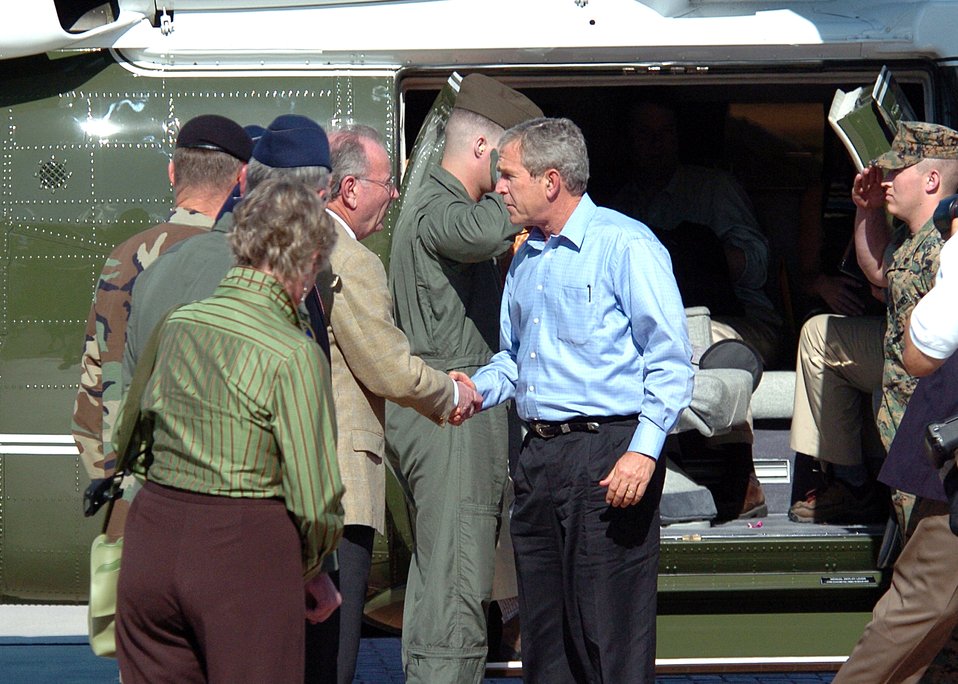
President monitors Hurricane Rita operations at Randolph

RANDOLPH AIR FORCE BASE, Texas -- President George W. Bush is greeted by San Antonio Mayor Phil Hardberger and other civilian and military representatives Sept. 24 upon his arrival here in Marine One. The president visited Randolph to receive an update about the military's role in Hurricane Rita relief operations.